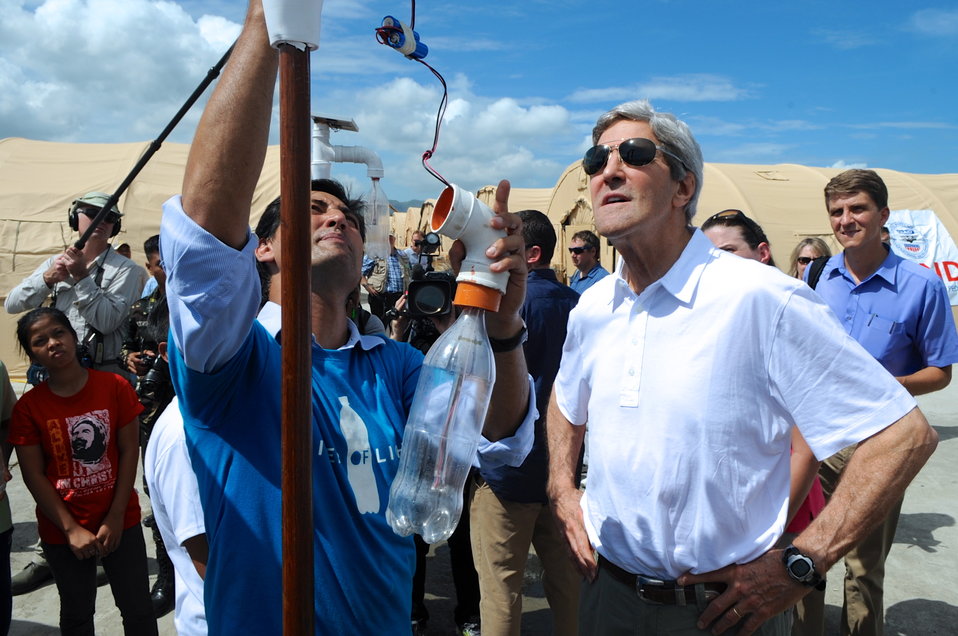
Secretary Kerry is Briefed on Inexpensive Green Lighting to Help Typhoon Victims

Illac Diaz of the MyShelter Foundation briefs U.S. Secretary of State John Kerry on December 18, 2013, about cheap, green solar lights he developed and which are being used by residents of Tacloban City, Philippines, in the aftermath of Typhoon Haiyan.